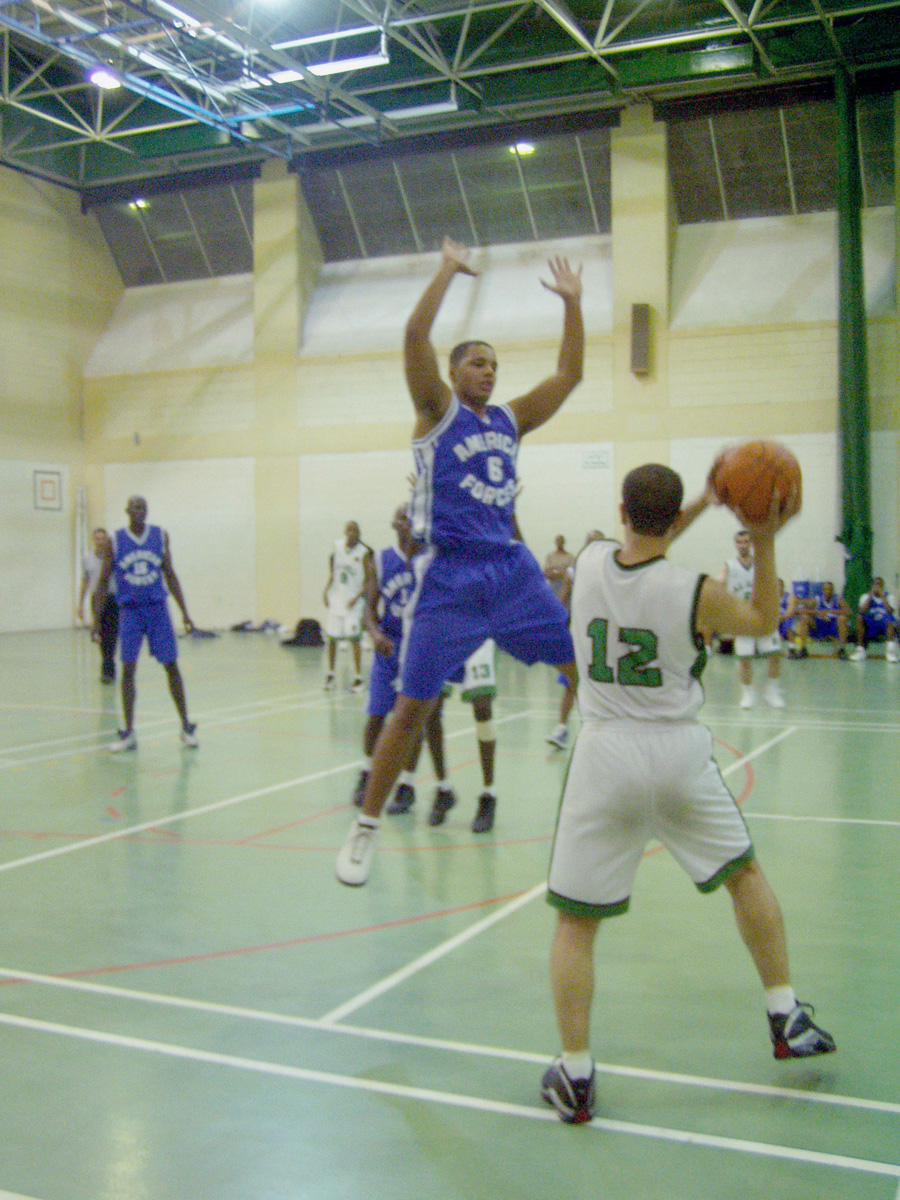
Shootin' hoops

DOHA, Qatar -- American Justin Fausett (6) tries for a steal in a scrimmage game against Al Ahli here Oct. 22. Fausett is an Army sergeant assigned to Army Central Command at Al Udeid Air Base. He and his joint-service teammates will become the first Americans to play in the nation's capitol city league Nov. 9. Fausett is deployed from Fort Lewis, Wash.